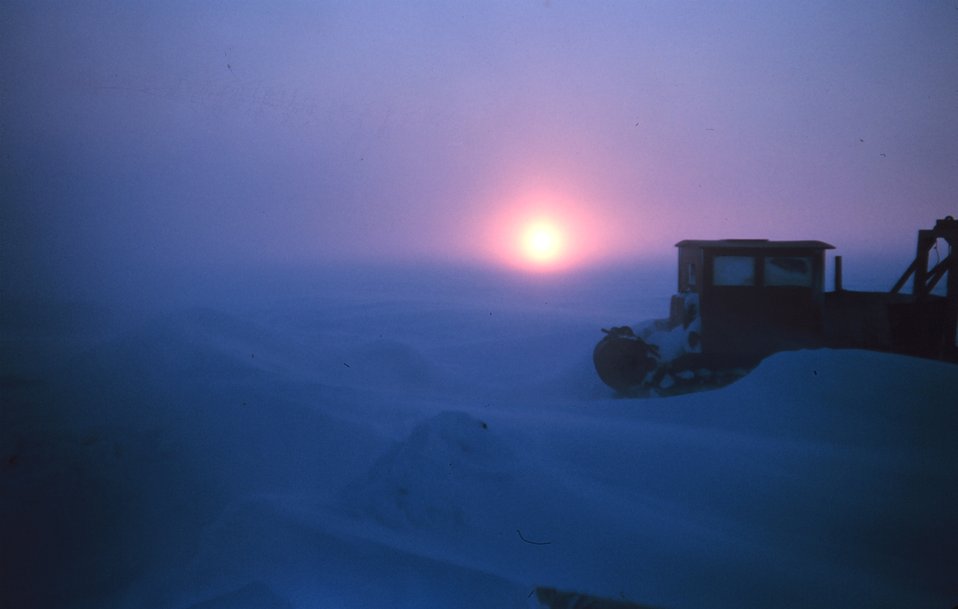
Time to start digging out the equipment covered by snow over the winter